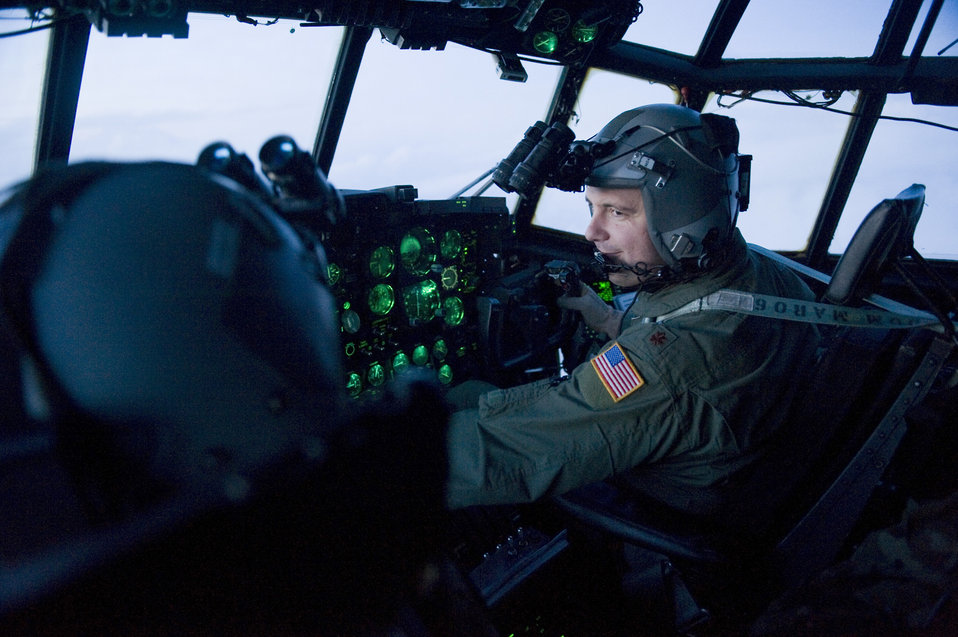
Delivering supplies

Maj. Kerry Redman flies March 16, 2011, during a supply-delivery mission to Sendai Airport, Japan. Major Redman is a pilot assigned to the 353rd Special Operations Group.